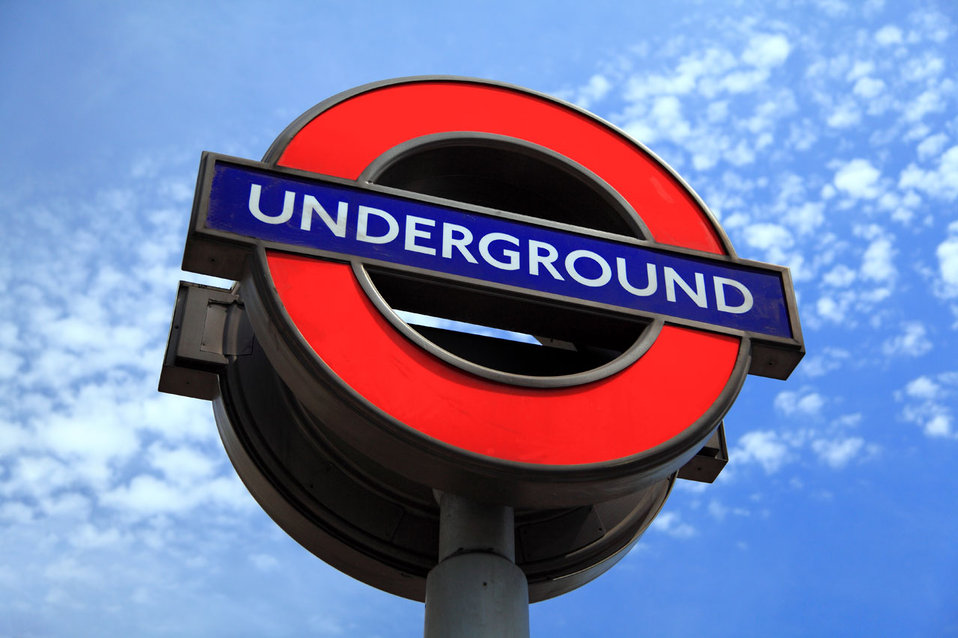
London underground sign

London underground logo against blue sky.